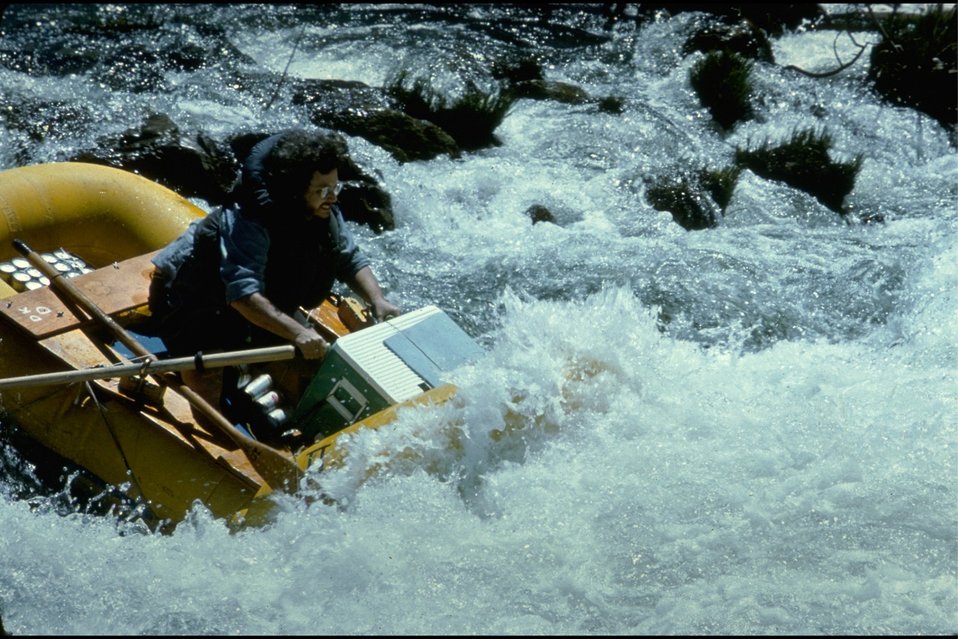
Rogue River - Rainie Falls.